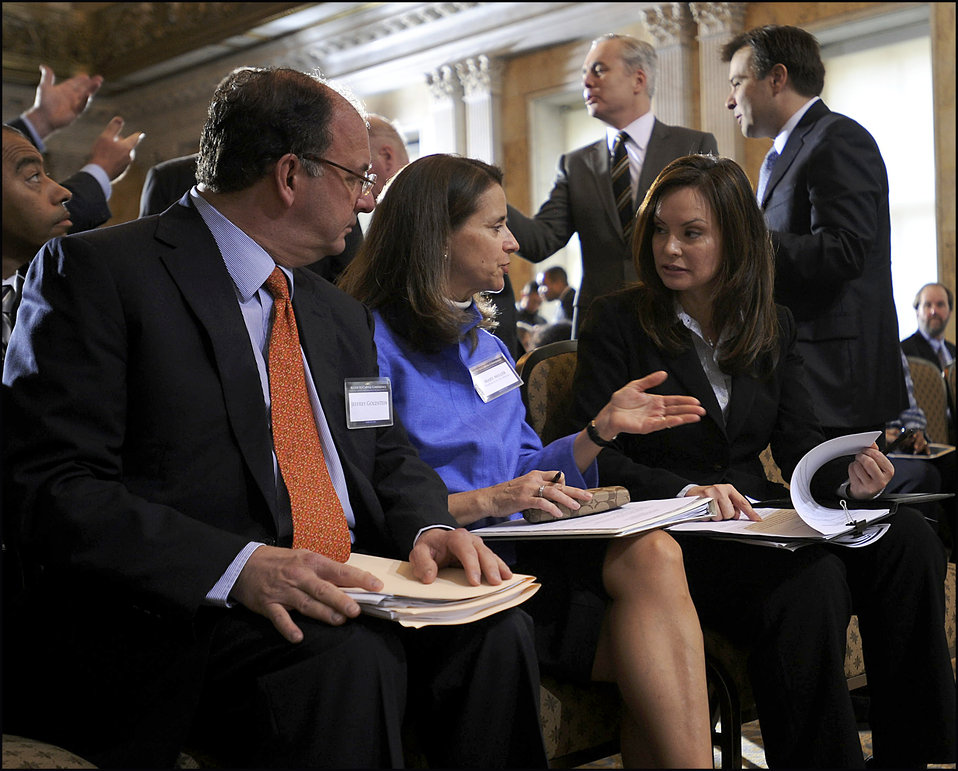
Access to Capital Conference

Under Secretary Jeffrey Goldstein, Assistant Secretary Mary Miller and Treasurer Rosie Rios before the conference began.